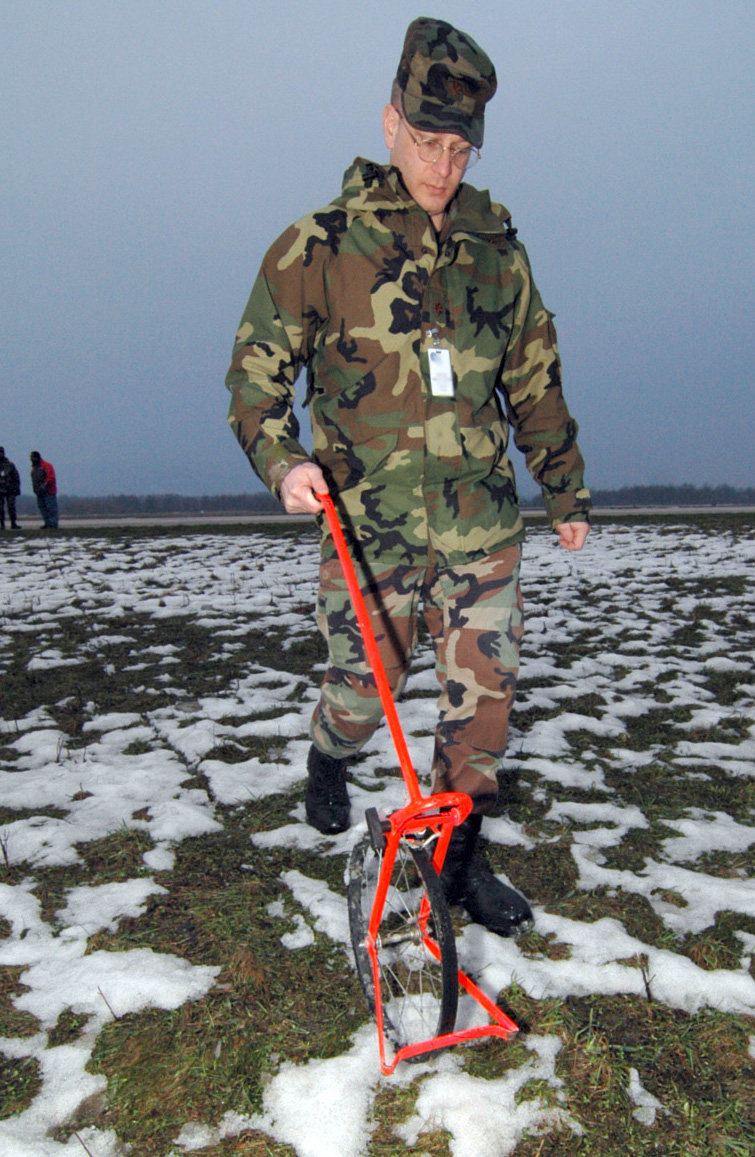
Bosnia teamwork

Maj. Louis Lilley uses a measuring wheel to determine the distance between the taxiway center line and suspected obstructions, in this case tree lines, as part of the waiver package at Tuzla Air Base.